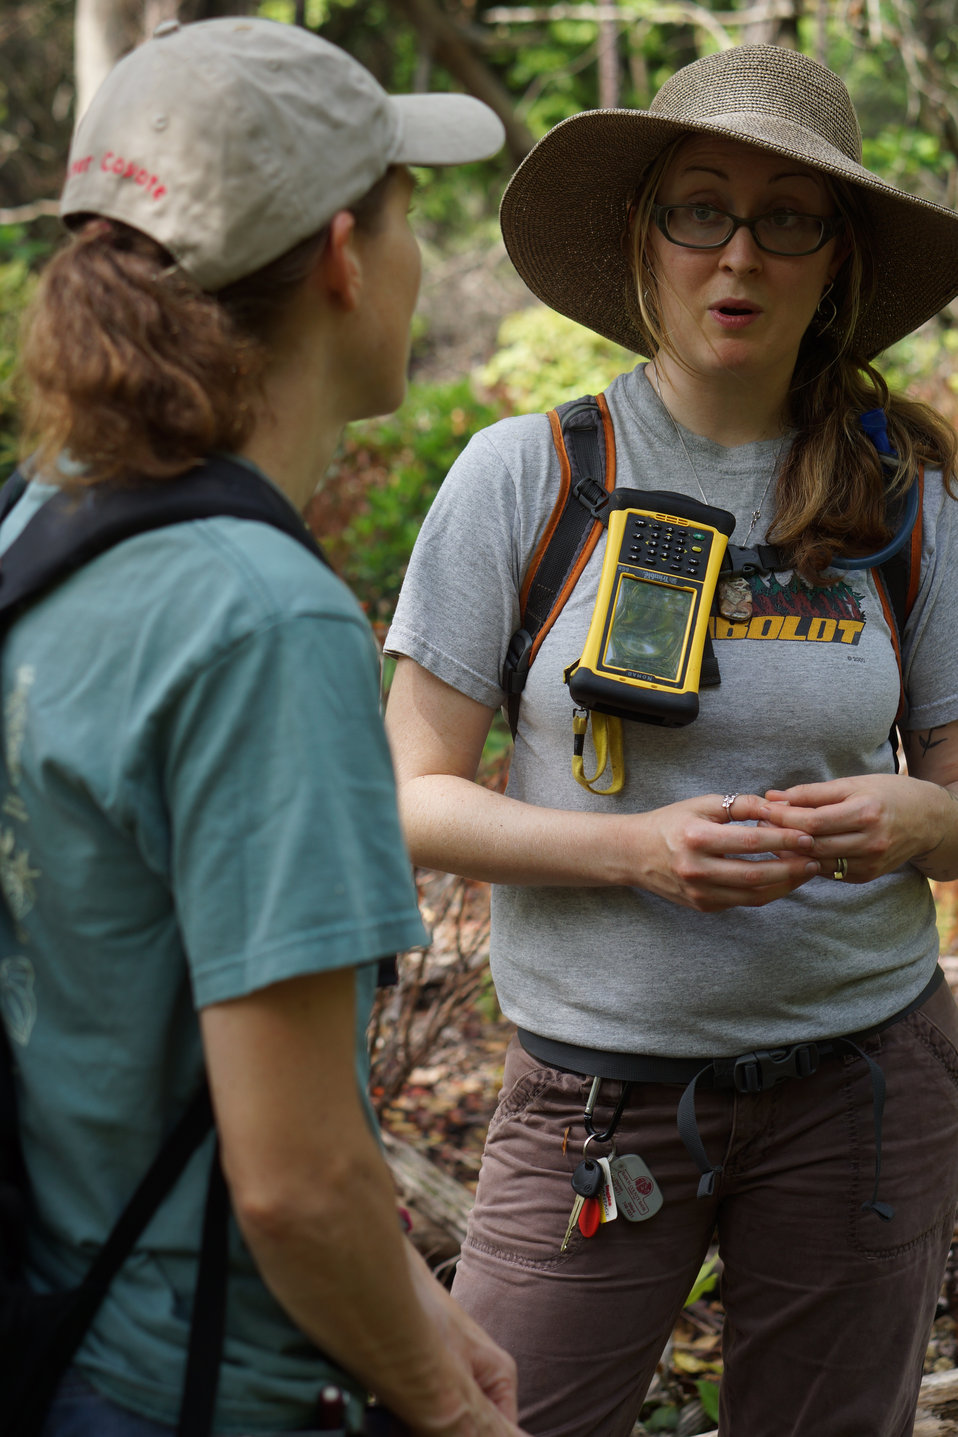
Carrie Brod speaks with Sarah Fraser

In May, bog conservationists from Tennessee, North Carolina, and Georgia convened in the north Georgia mountains for the spring, 2014 meeting of the Bog Learning Network. The event provided an opportunity for biologists to see, first hand, the result of management efforts at two north Georgia bogs. More importantly, the outings provided an opportunity to share innovative approaches to bog management, such as the role of the Georgia Plant Conservation Alliance in conserving rare plants and coordinating a cadre of volunteers to work on bog management.

The Bog Learning Network was convened in the winter of 2013 as a way to bring together people working for bog conservation across the Southern Appalachians. Southern Appalachian bogs are one of North America’s rarest habitats and home to many rare plants and animals.